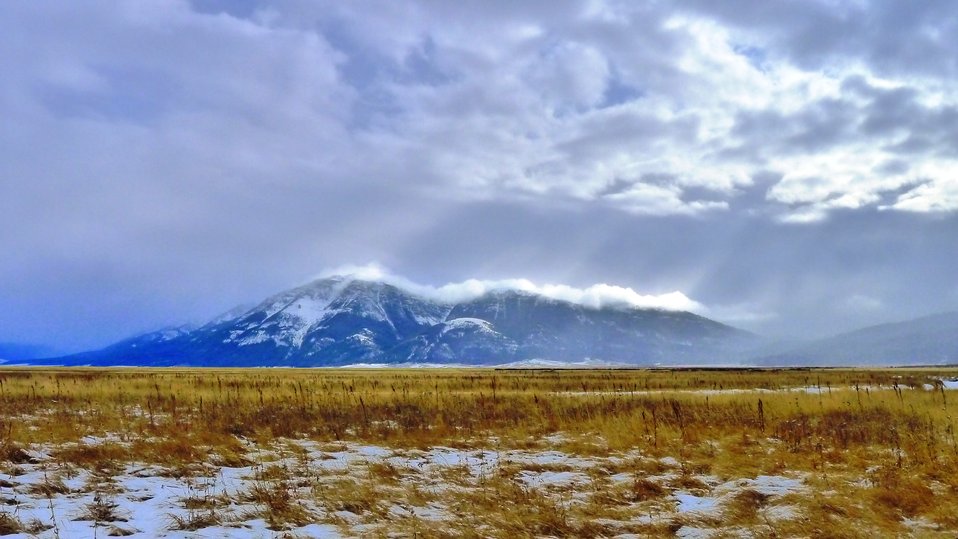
wilderness light at Red Rock Lakes

Red Rock Lakes National Wildlife Refuge, MT